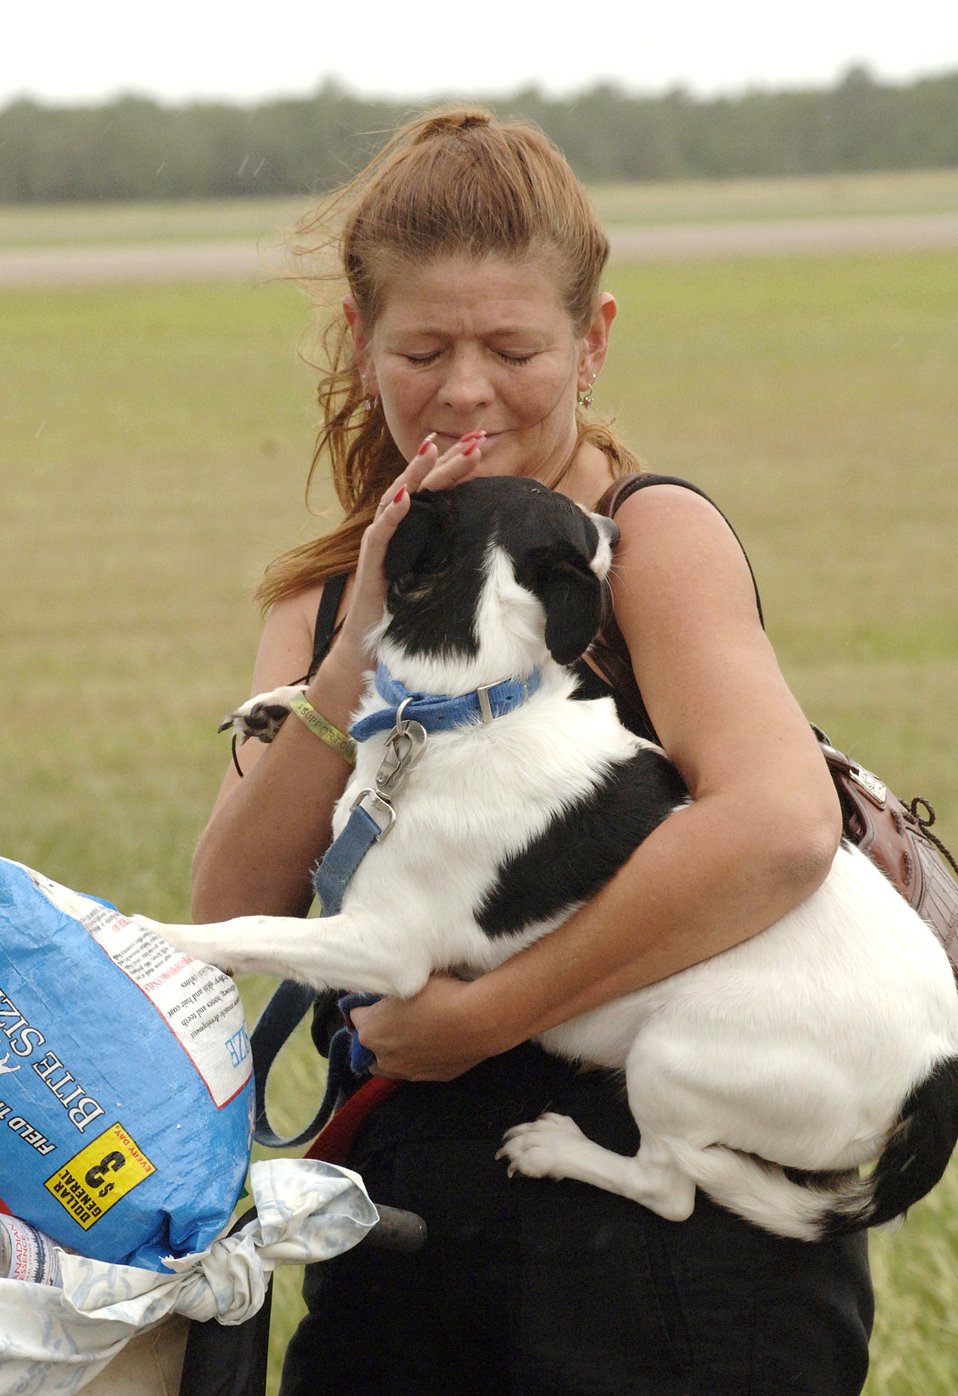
Airlifted to safety

BEAUMONT, Texas(AFPN) -- Linda Haley calms her frightened dog, Shep. Linda and her two dogs were among thousands of Texans evacuated from the Southeast Texas Regional Airport here prior to Hurricane Rita hitting the Texas and Louisiana coastline.